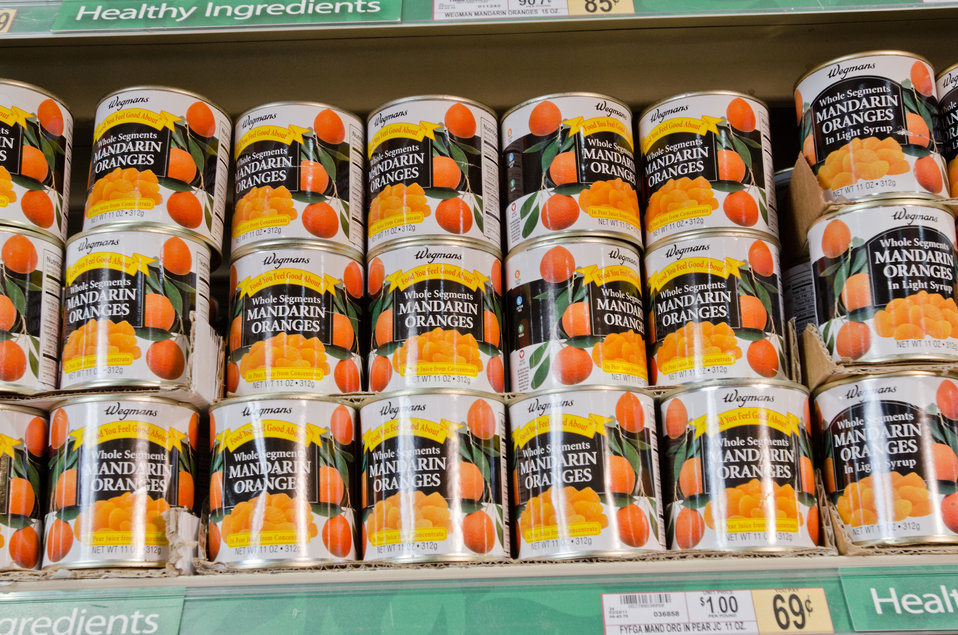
Canned goods at a grocery store in Fairfax, Virginia, on March 3, 2011.